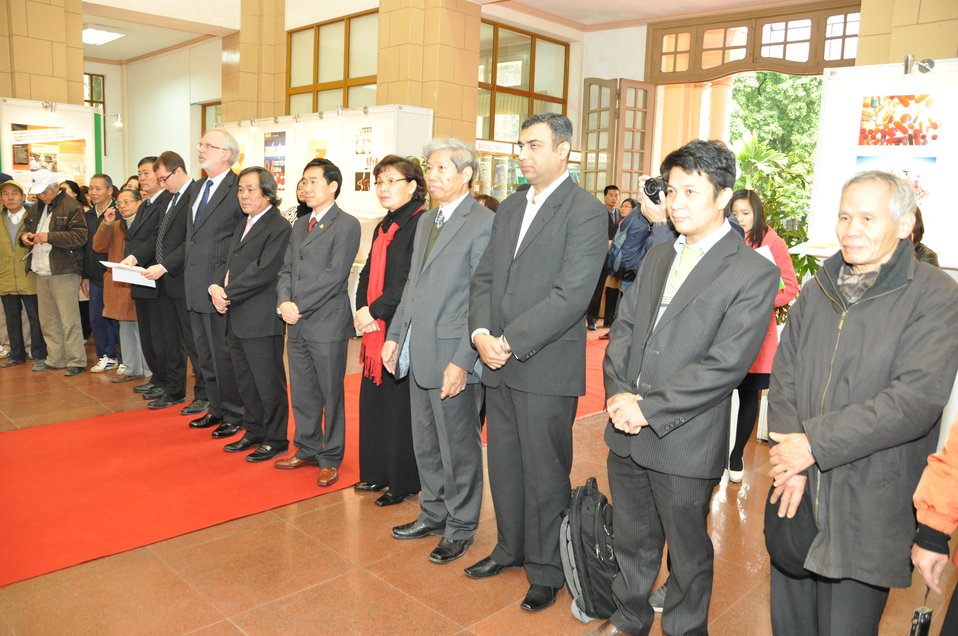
U.S. Ambassador David Shear opens safe medicine exhibition in Hanoi

Safe Medicine Exhibition